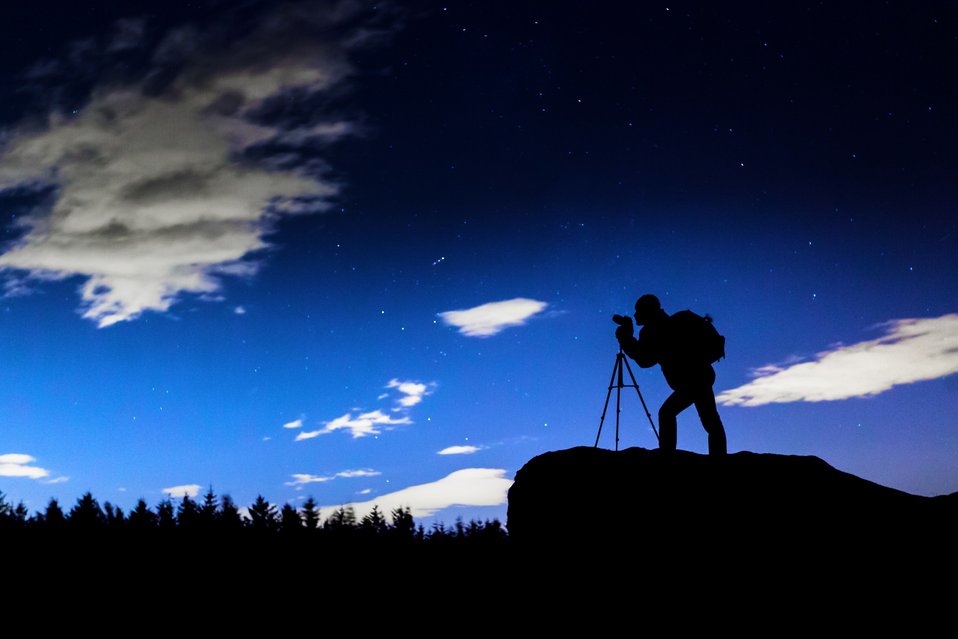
Photographer silhouette at night

A photographer is taking photos of stars.